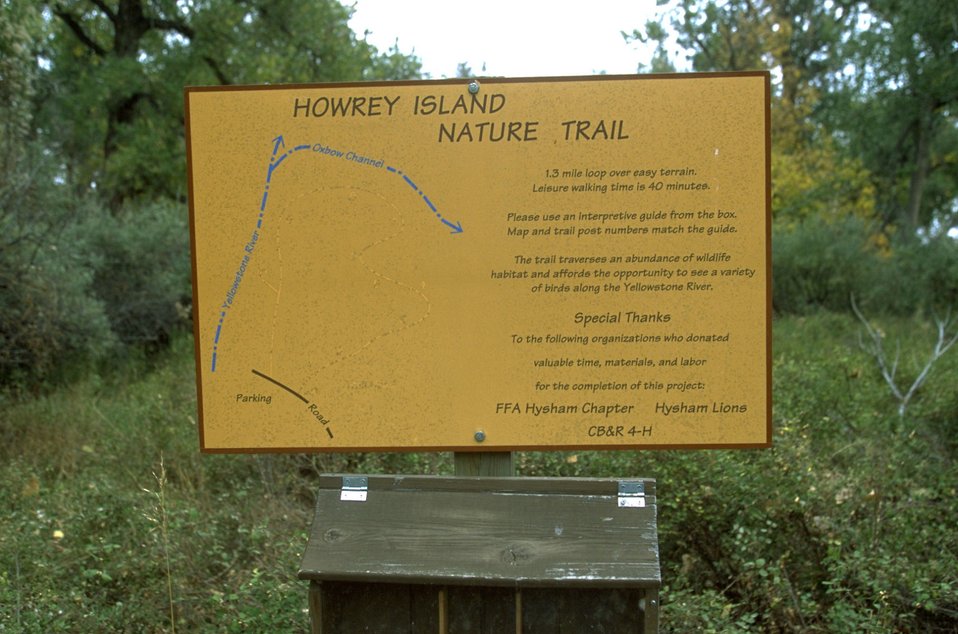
Map of Nature Trail sign - Howrey Island Recreation Area along the Yellowstone River